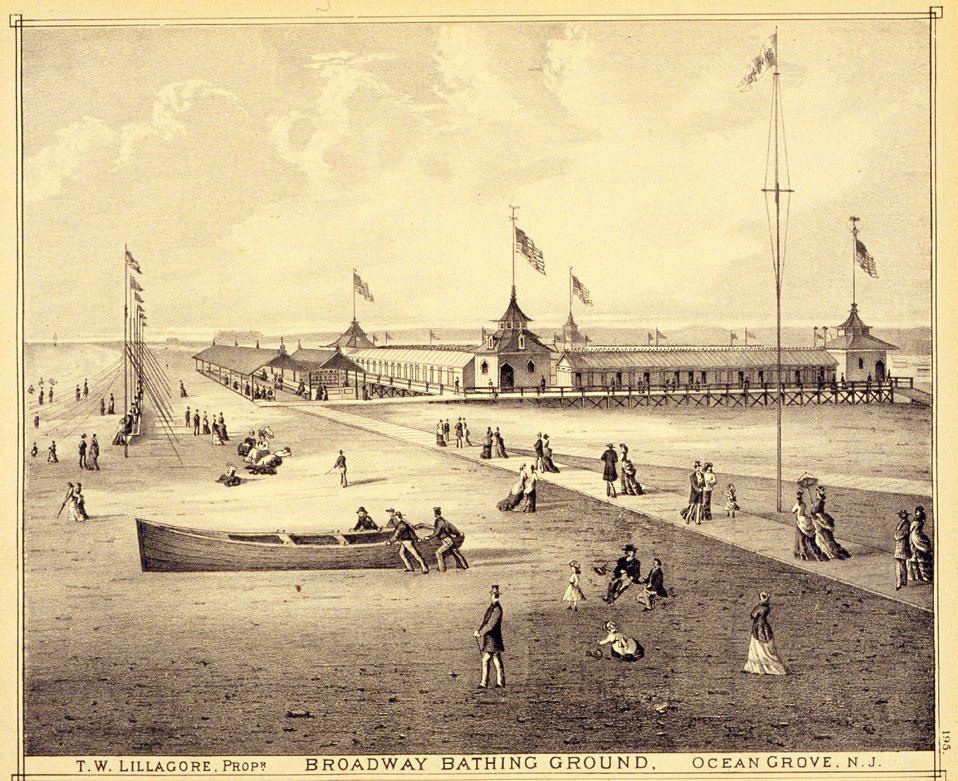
Broadway Bathing Ground, Ocean Grove, New Jersey. P. 195. 'Historical and Biographical Atlas of the New Jersey Coast,' by T. F. Rose, 1878.